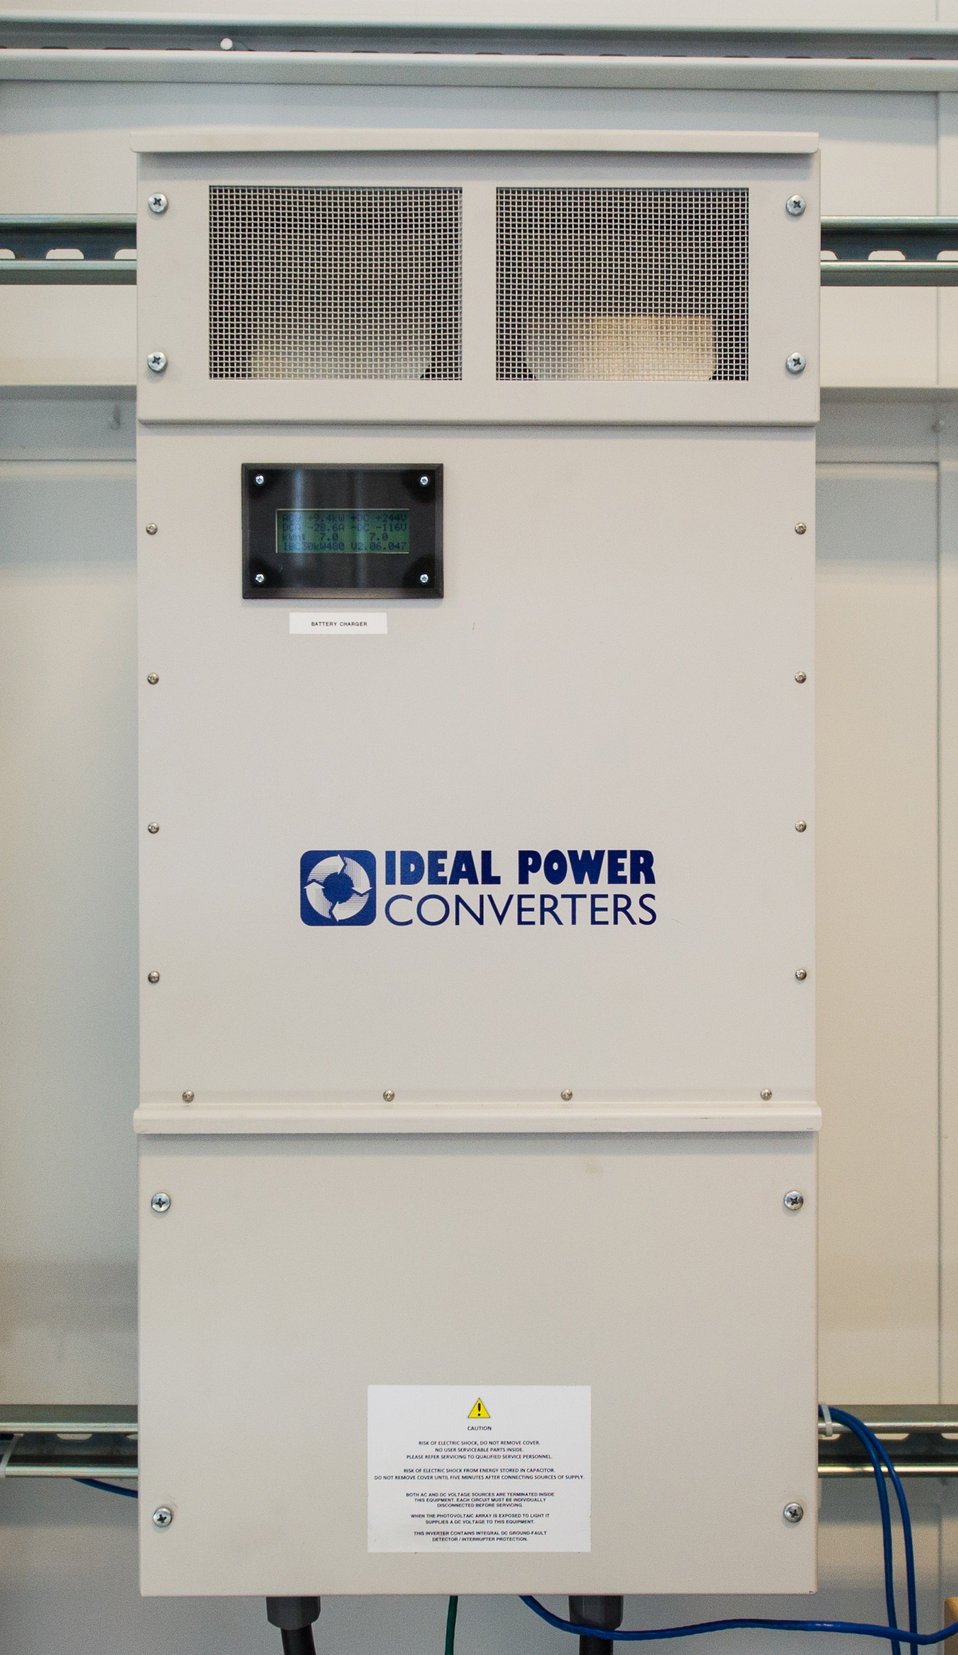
VTIF Research

July 26, 2013 - Ideal Power Inverter used in an experiment at the Vehicle Testing and Integration Facility (VTIF), maximizing solar power generation for the fast charging of an electric vehicle (Gray Nissan Leaf) from a solar PV source. The battery in the Ford Transit (white van) acts as a stationary battery, simulating the utility grid load and providing additional power or storing excess power as needed to charge the EV.